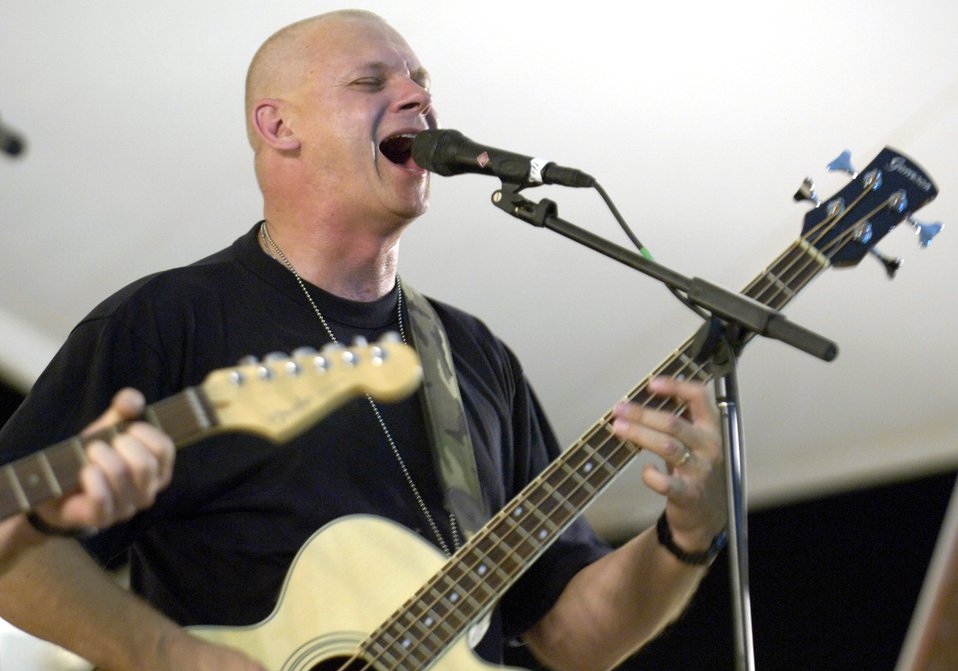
Expeditionary band performs for troops in Southwest Asia

Master Sgt. Bill Swanberger of the U.S. Central Air Forces Expeditionary Band